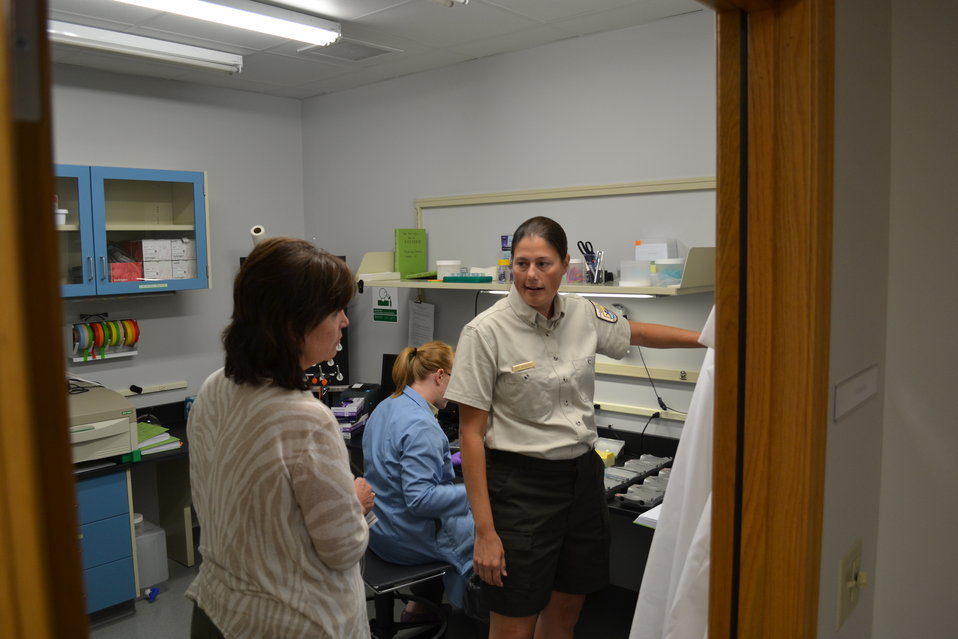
PCR process

Geneticist Emy Monroe shows Rep. Betty McCollum (D-Minn.) the way that polymerase chain reaction (PCR) and gel electrophoresis is used to determine if Asian carp eDNA is present in a a water sample.